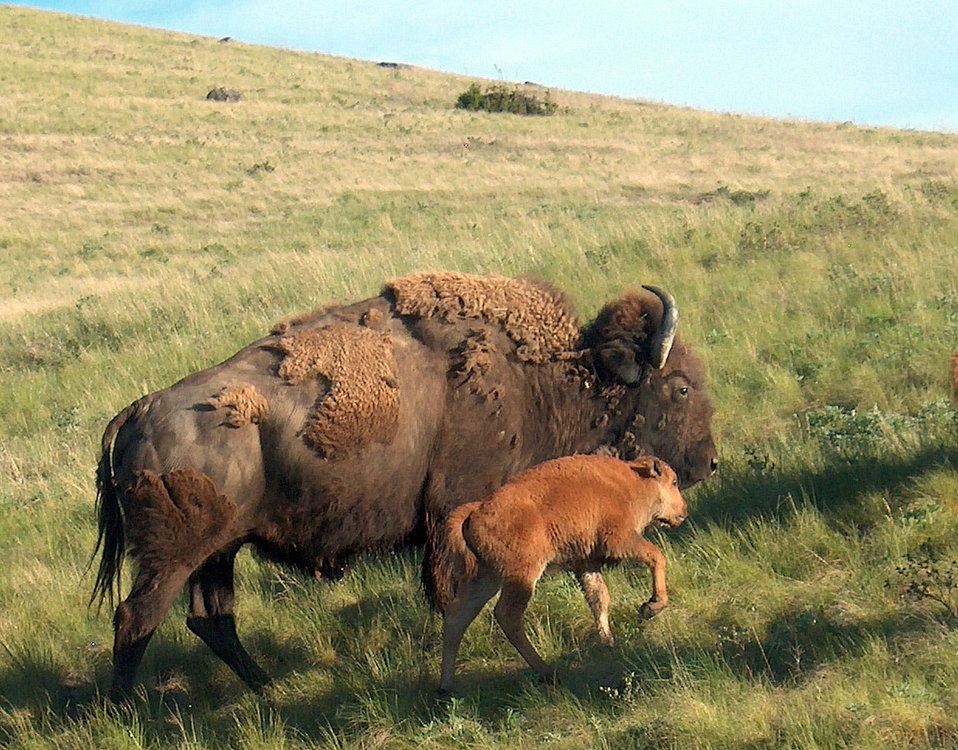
Bison Cow and Calf

A female bison and her calf at the National Bison Range in Montana. In response to declining calf production, the Wildlife Health Office initiated a graduate study to investigate bison reproduction at the National Bison Range.